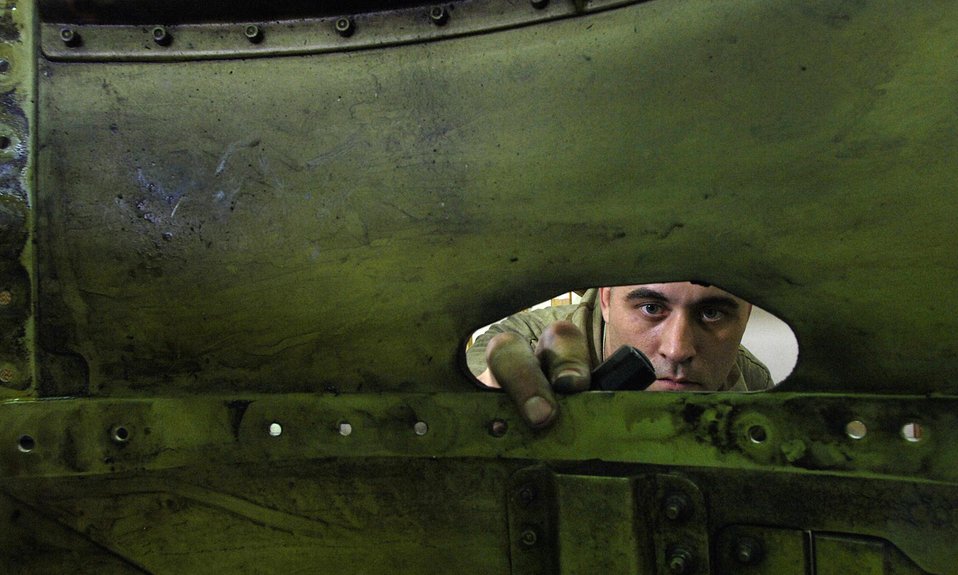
Phase team keeps F-16s in the fight

Staff Sgt. Justin Johnson inspects panels on an F-16 Fighting Falcon for cracks April 16 at Balad Air Base, Iraq. Sergeant Johnson is assigned to the 332nd Expeditionary Maintenance Squadron as a phase inspection team member. He is deployed to Balad AB from Misawa AB, Japan, on his fifth deployment.